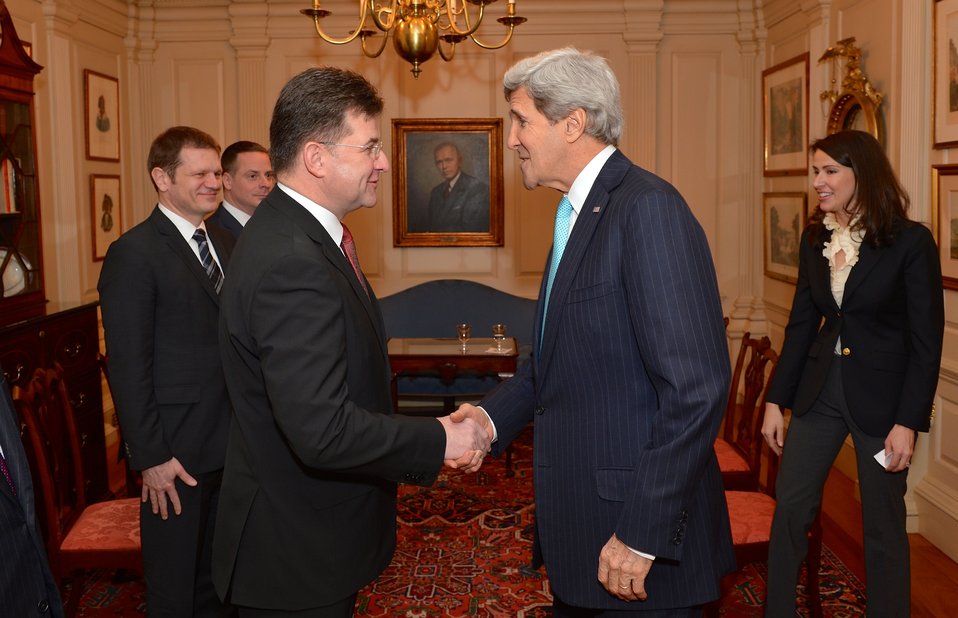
Secretary Kerry Greets Slovak Deputy Prime Minister and Foreign Minister Lajcak

U.S. Secretary of State John Kerry greets Slovak Deputy Prime Minister and Foreign Minister Miroslav Lajcak before their meeting at the U.S. Department of State in Washington, D.C., on March 20, 2014.